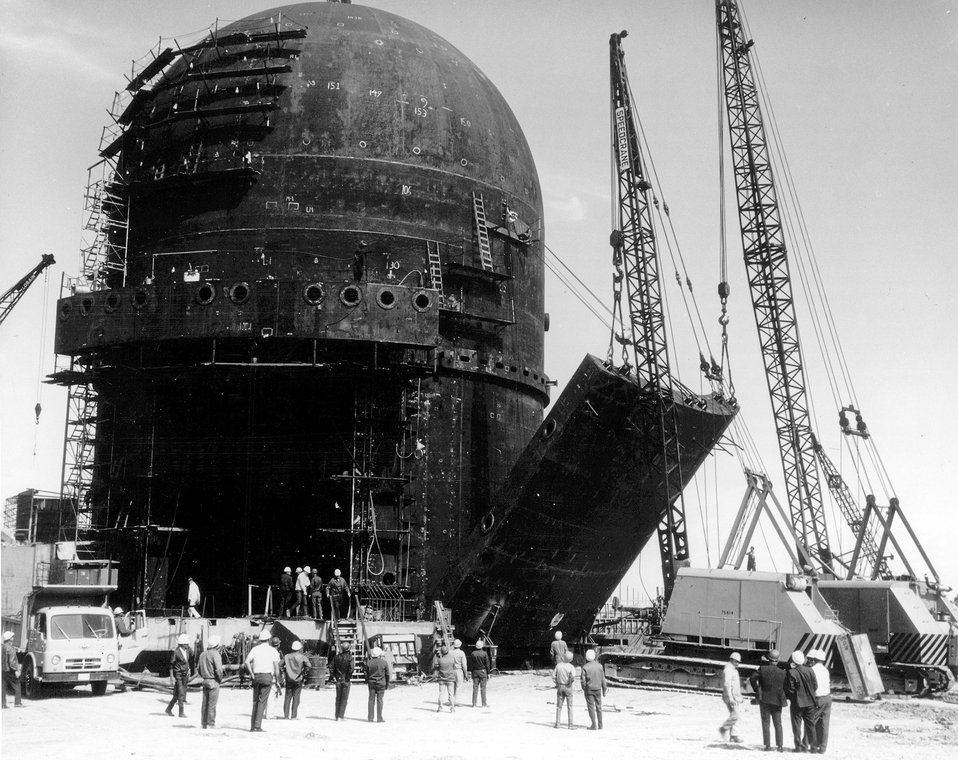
National Reactor Testing Station, Idaho... Workmen are dwarfed by the 200-ton door being raised into position for the LOFT (Loss of Fluid Test) containment building now 92 percent completed at the Atomic Energy Commission's National Reactor Testing Station in Idaho. Circa 1970.